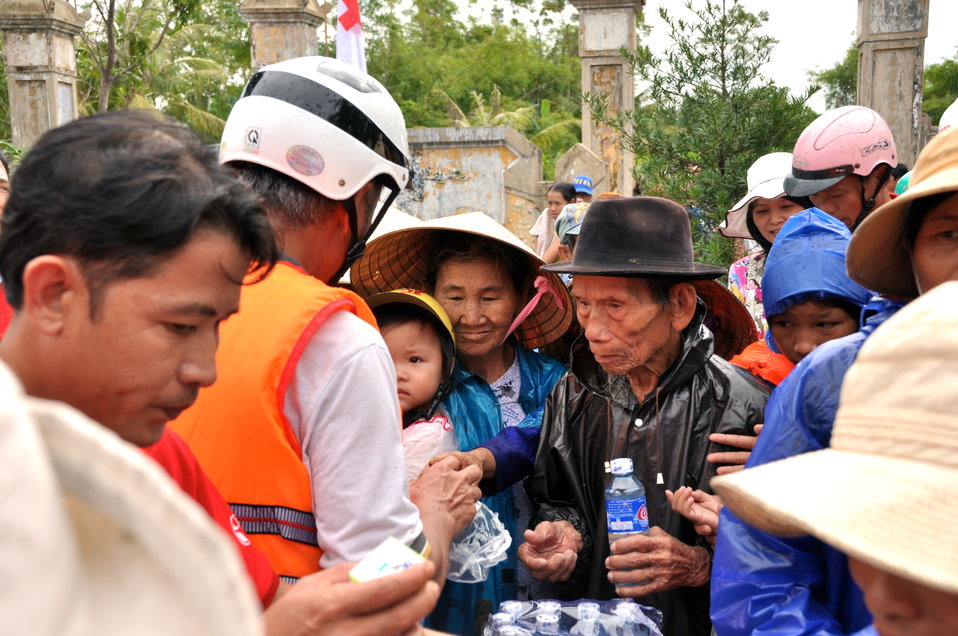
USAID and Save the Children support community evacuation drill and emergency preparedness in central Vietnam

Loc An Commune, Phu Loc District, Thua Thien Hue Province
December 4, 2012, Photo: Richard Nyberg, @USAIDVietnam